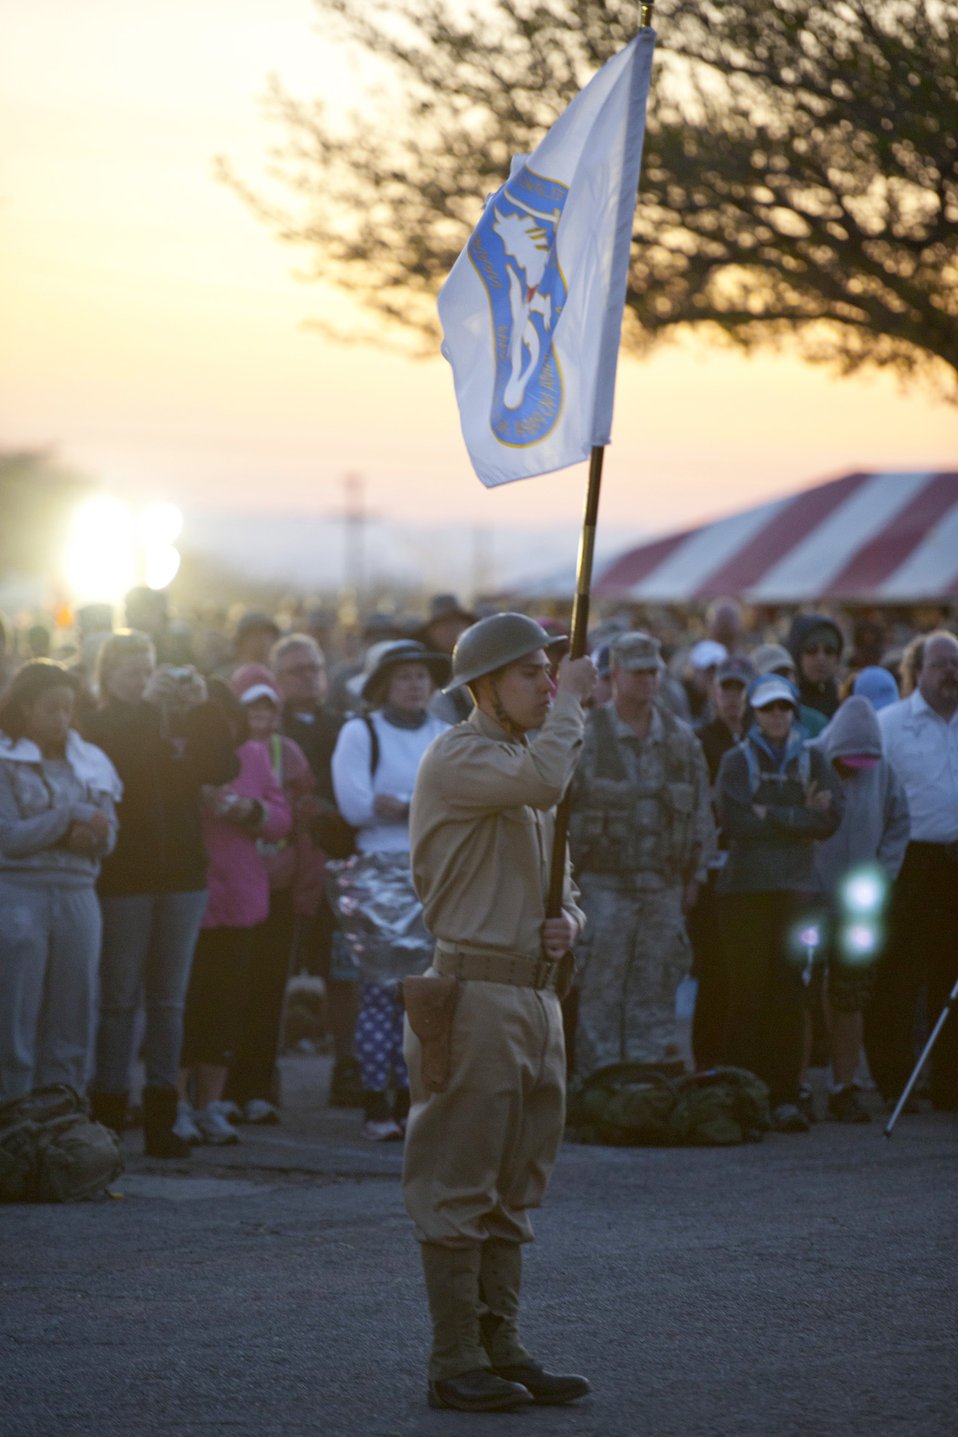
Memorial marathon eternalizes Bataan Death March

A participant of the 22nd Annual Bataan Memorial Death March holds a flag March 27, 2011 during a moment of silence at White Sands Missile Range, New Mexico. Three remaining survivors attended the opening ceremony. The event, attended by a record number of more than 6,000 marchers, commemorated the original Bataan Death March, which occurred in the Philippines during World War II.